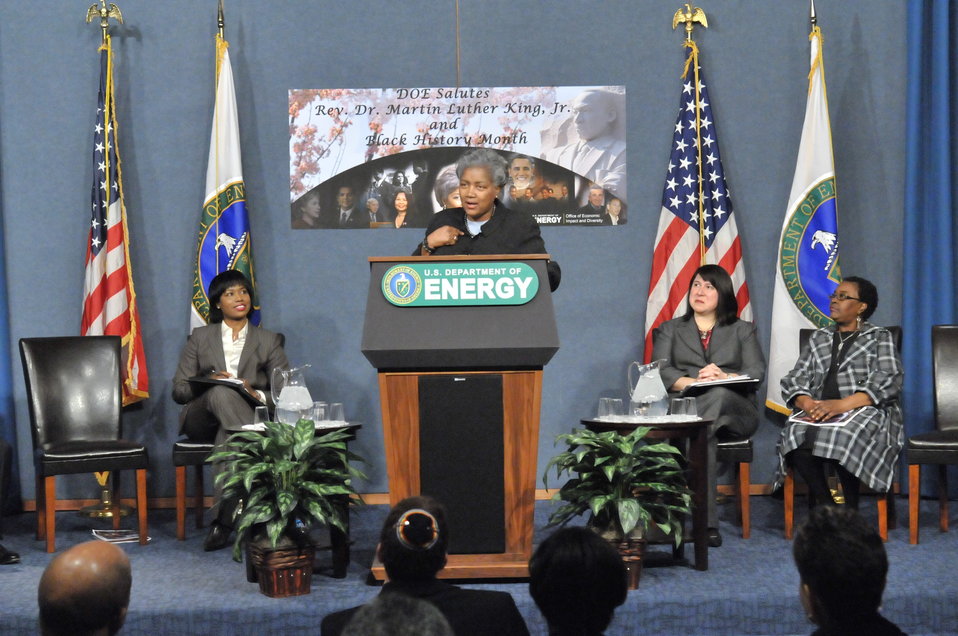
DEPARTMENT OF ENERGY -MARTIN LUTHER KING / BLACK HISTORY MONTH COMMEMORATIVE PROGRAM WITH DOE SECRETARY E. MONIZ IN ATTENDANCE